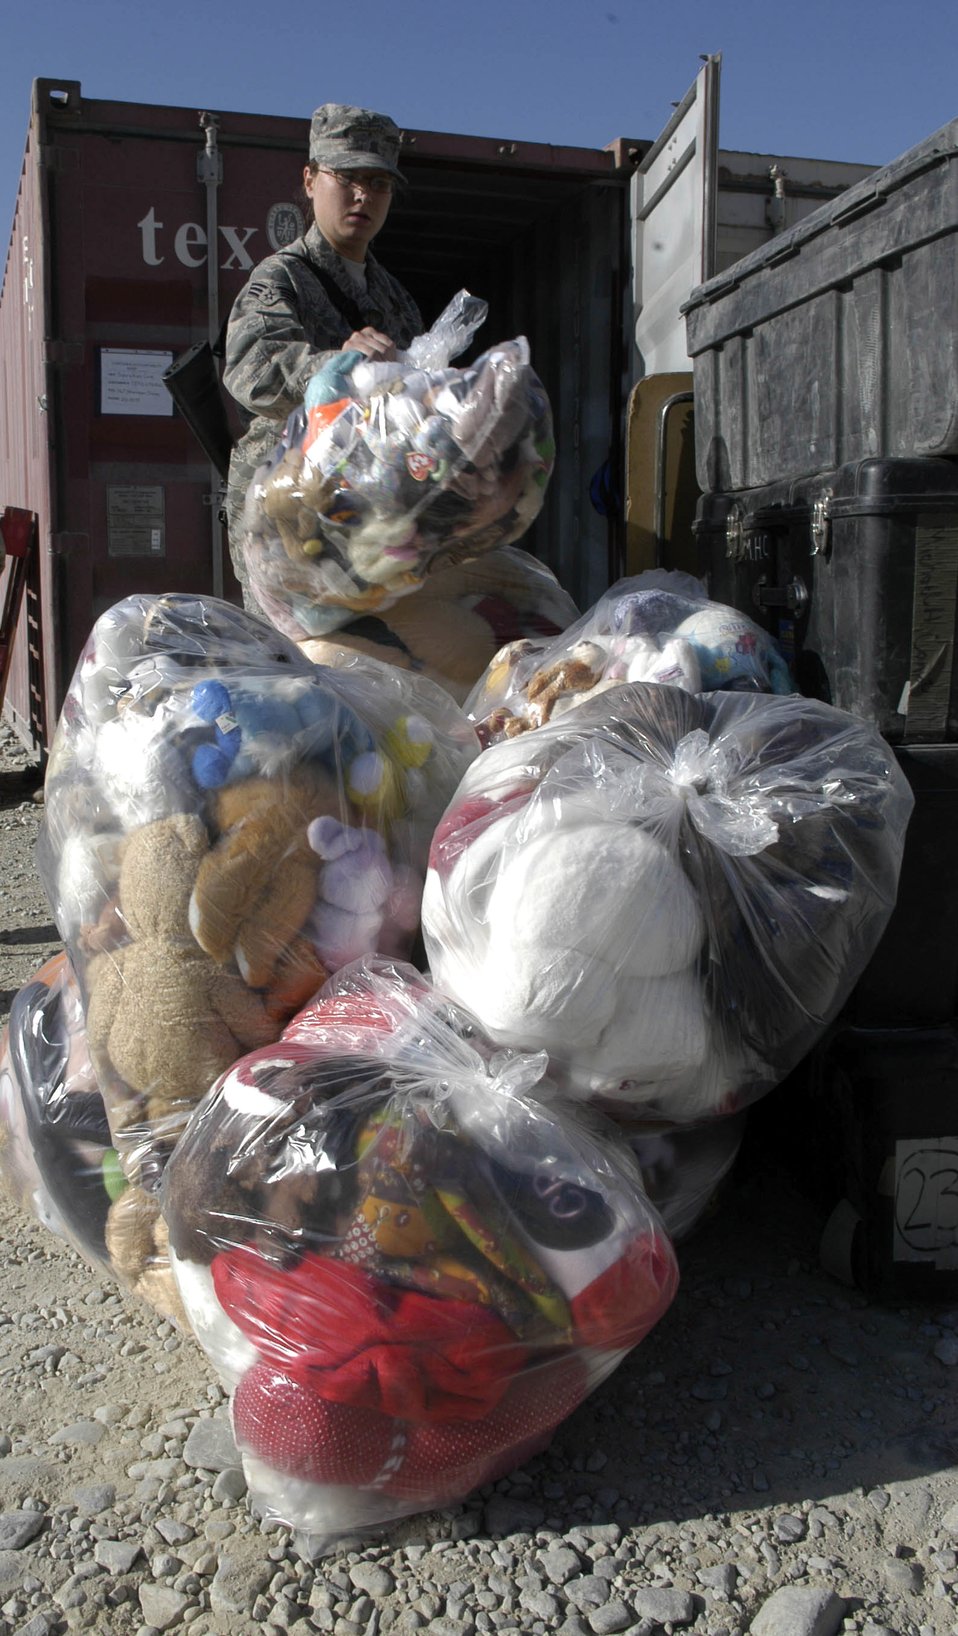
Bagram Airmen help bring better life to Afghan families

Senior Airman Elisa Rosemond stacks bags of toys for Afghan children prior to an Operation Care visit to the Korean Hospital Oct. 17 near Bagram Air Base, Afghanistan. Operation Care is an all-volunteer effort that provides clothes, school and hygiene supplies, toys and candy to Afghan villagers.